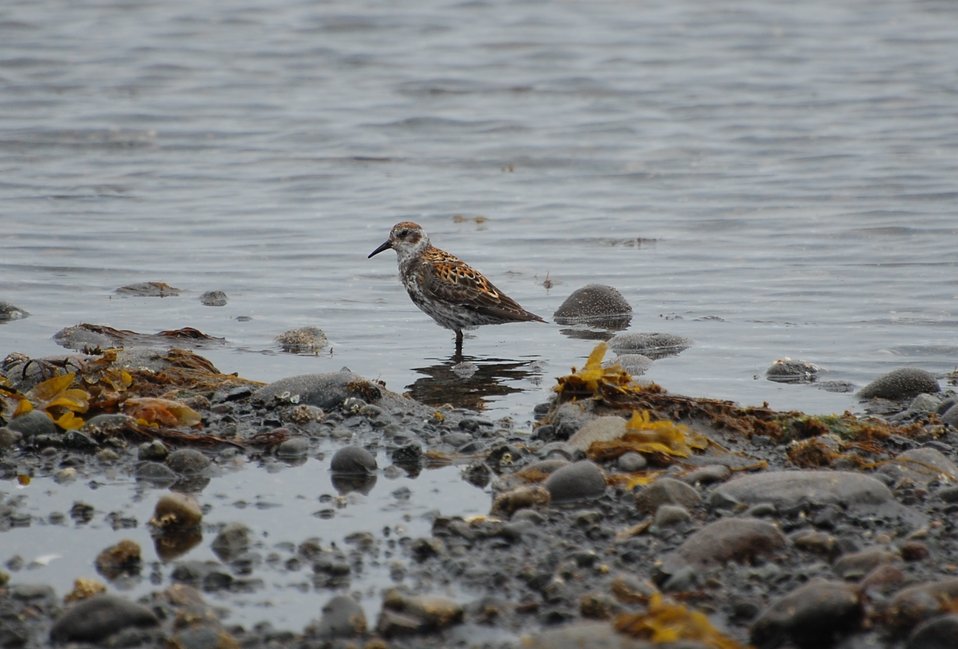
Rock Sandpiper

Kinzarof Lagoon, Izembek National Wildlife Refuge
Photo by Kristine Sowl,
USFWS, Public Domain